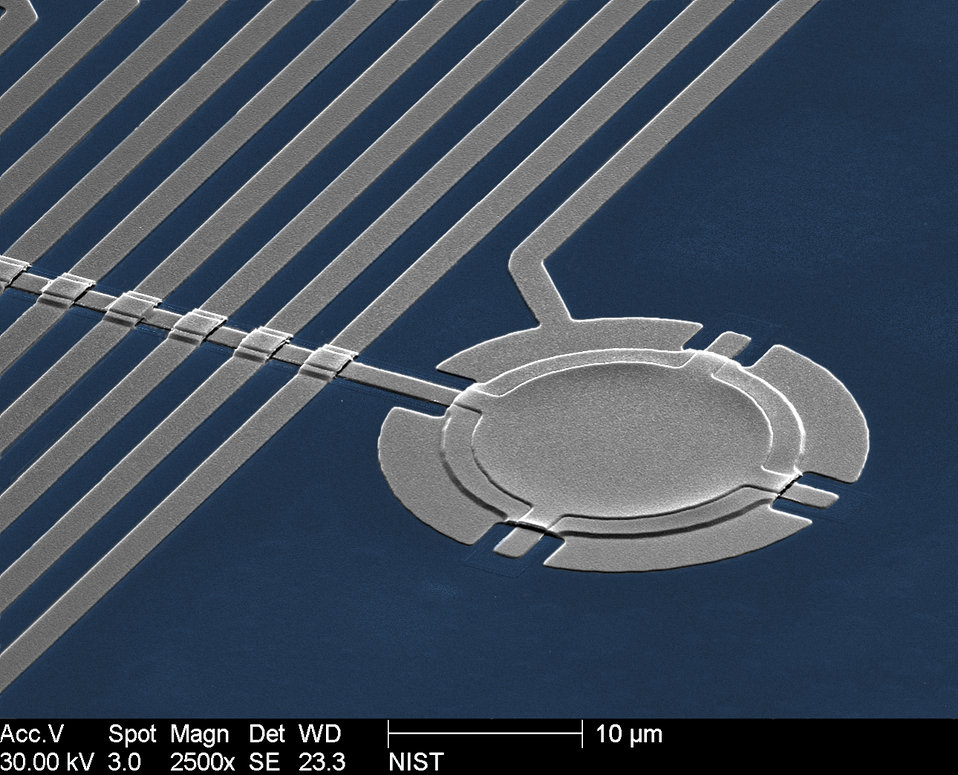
Aluminum Drum

Colorized micrograph of NIST's aluminum drum, which is 15 micrometers in diameter and 100 nanometers thick. The drum is used in quantum information experiments and ultraprecise measurements of mechanical motion.